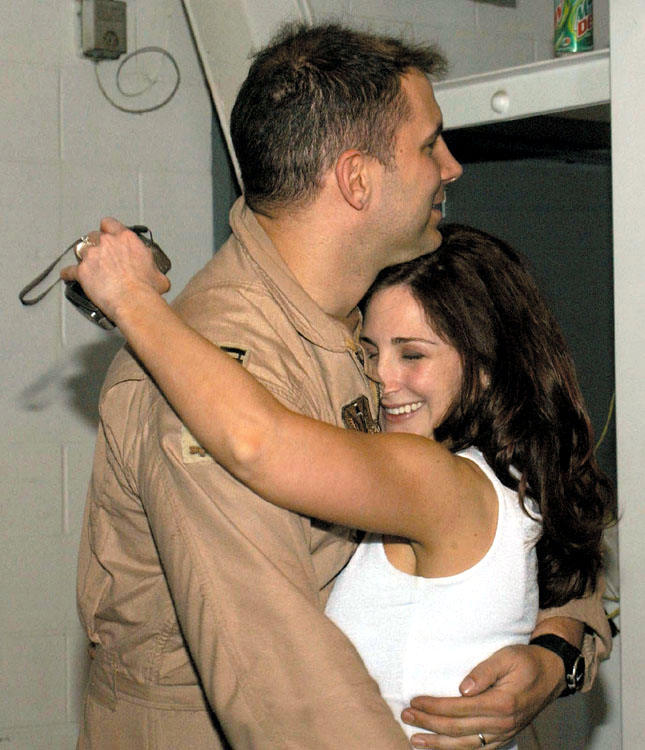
Embracing freedom

MINOT AIR FORCE BASE, N.D. -- Capt. Dean Sniegowski, a 23rd Bomb Squadron radar navigator, is welcomed home by his wife, Wendy. Sniegowski returned home after being deployed for two months supporting Operation Iraqi Freedom.